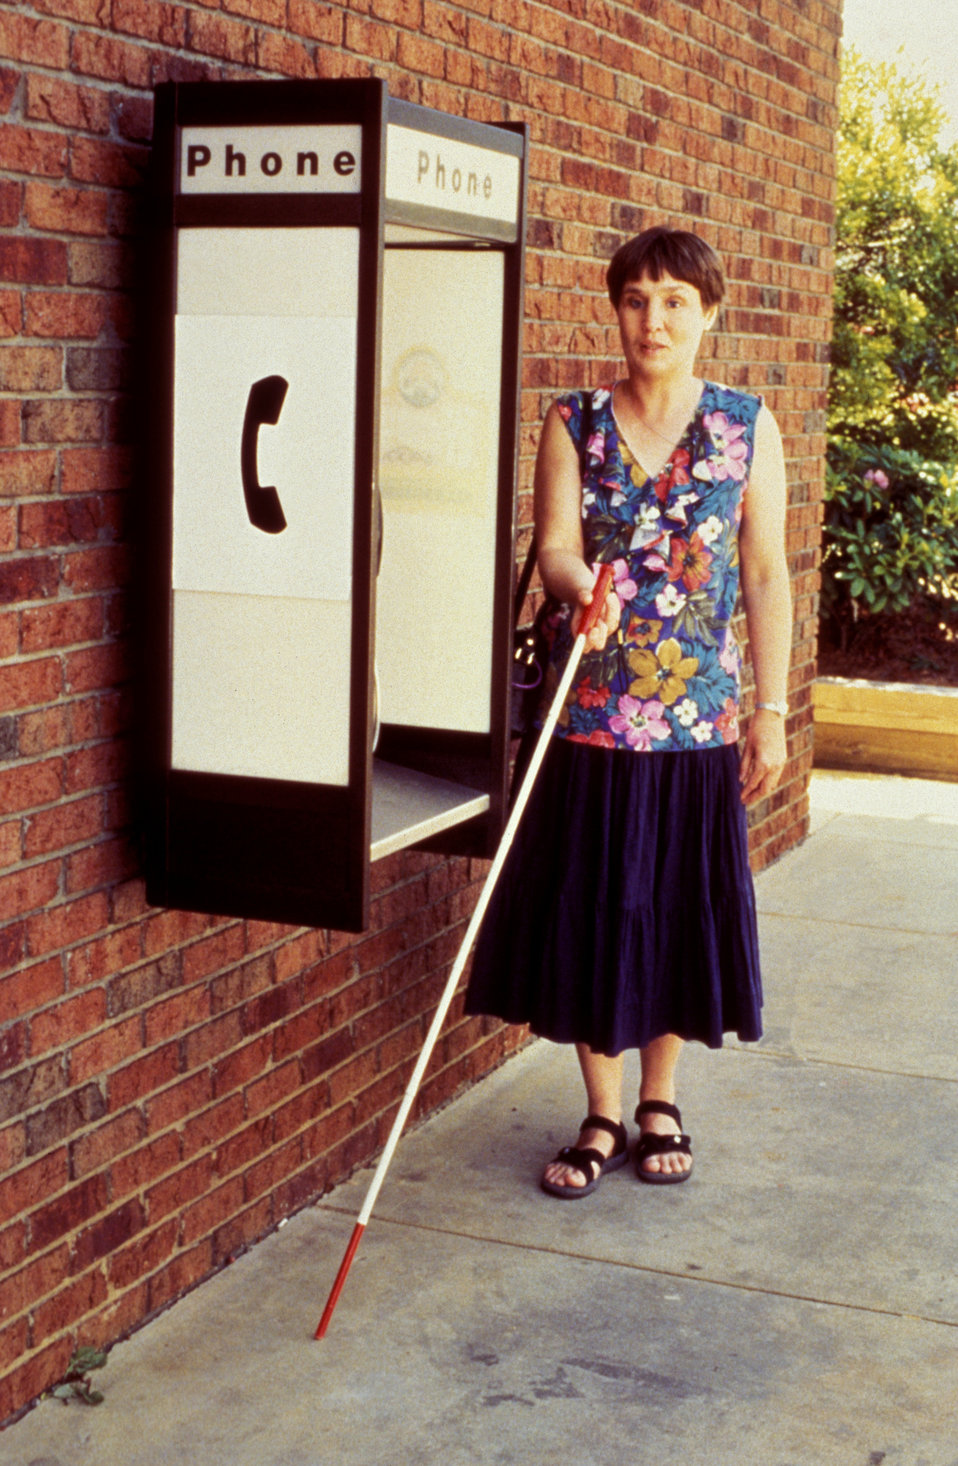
This visually-impaired woman was using a walking stick in order to 'extend her reach' in order to detect obstacles in her path. Using a 'sweeping' motion was able to forewarn her of objects, such as this phone booth, as well as changes in terrain. You can see how taking into account impairments such as this makes the process of designing such publicly-accessible environmental surroundings challenging, but necessary. See PHIL# 9062 and 9064 for additional pictures of this person interacting with other environments while using her walking stick.